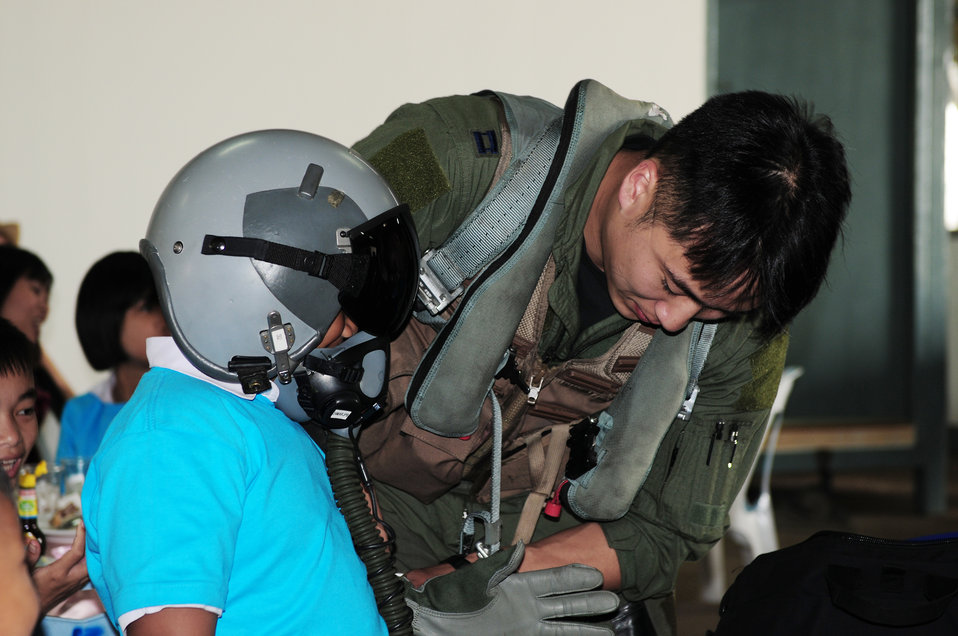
Cope Tiger 2010 open house

Capt. Albert Chang outfits a young Thai student with flight equipment during the Cope Tiger 2010 open house held for more than 50 Thai students March 10 at Udon Thani Royal Thai Air Force Base, Thailand. Captain Chang is a pilot from the 25th Fighter Squadron at Osan Air Base, South Korea.